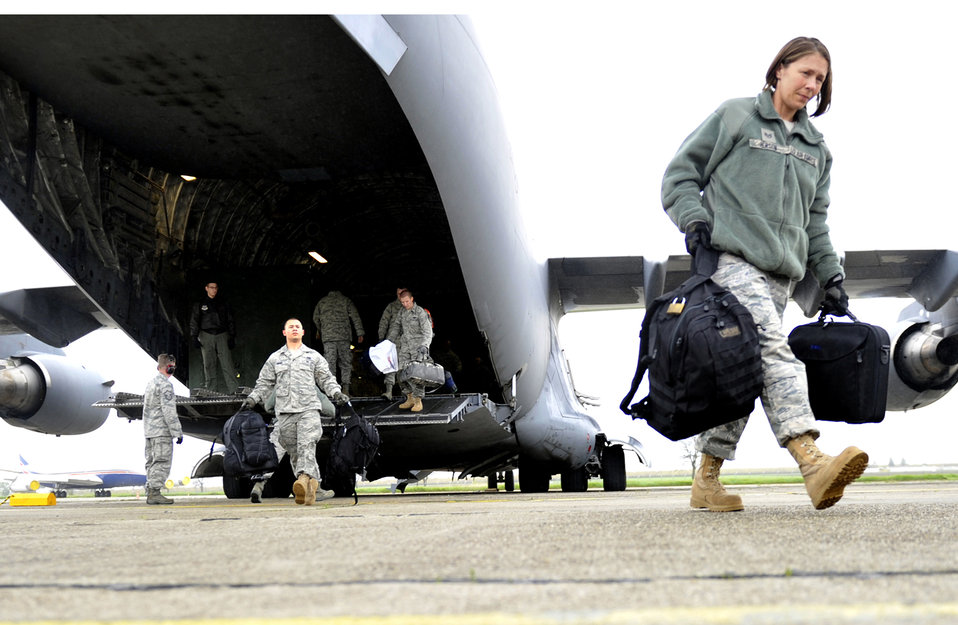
Airmen ready Romanian airport for U.S. multi-modal shipments

Members of the 621st Contingency Response Element off-load a C-17 Globemaster III upon arrival May 9, 2011, at Mihail Kogalniceanu Air Base, Romania. Fifty-four members of the 621st Contingency Response Wing deployed here to extend airfield capability supporting multi-modal operations during a U.S. Transportation Command proof-of-principle evaluation. The process is expected to demonstrate the feasibility of using the air base as a hub for equipment flowing into and out of Afghanistan.